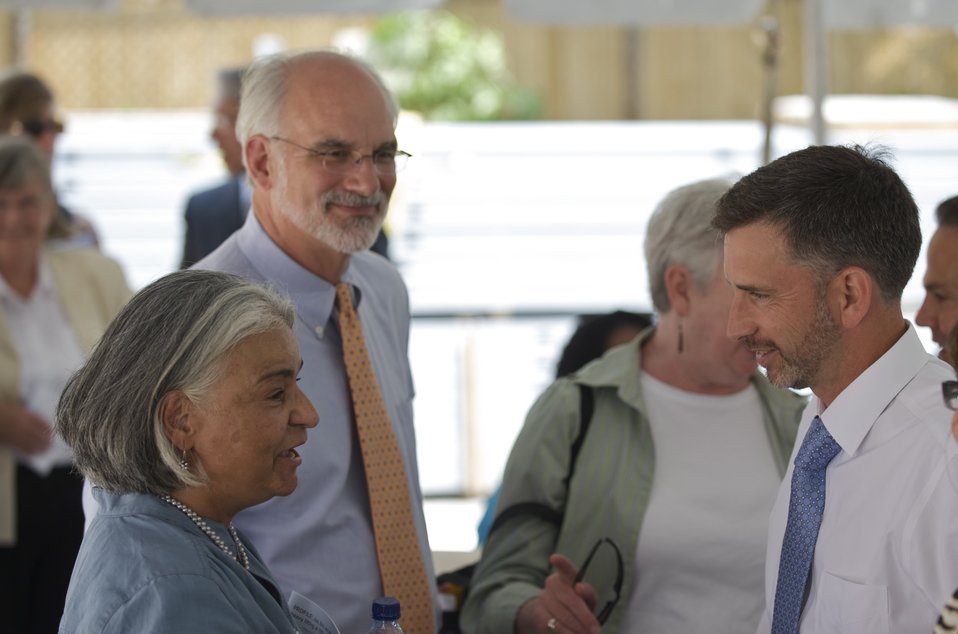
RI Ground Breaking 6/28/10

Together with their community partners, OpenDoors, the U.S. Treasury, the City of Providence and Rhode Island Housing officially kicked off construction of Rhode Island’s first development specifically created to support Rhode Islanders who are returning to the community after incarceration. Executive Director of OpenDoors Sol Rodriguez, Executive Director of Rhode Island Housing Richard Godfrey and Assistant Secretary Dan Tangherlini helped break ground at the site of the historic former Sealtest Ice Cream Factory.